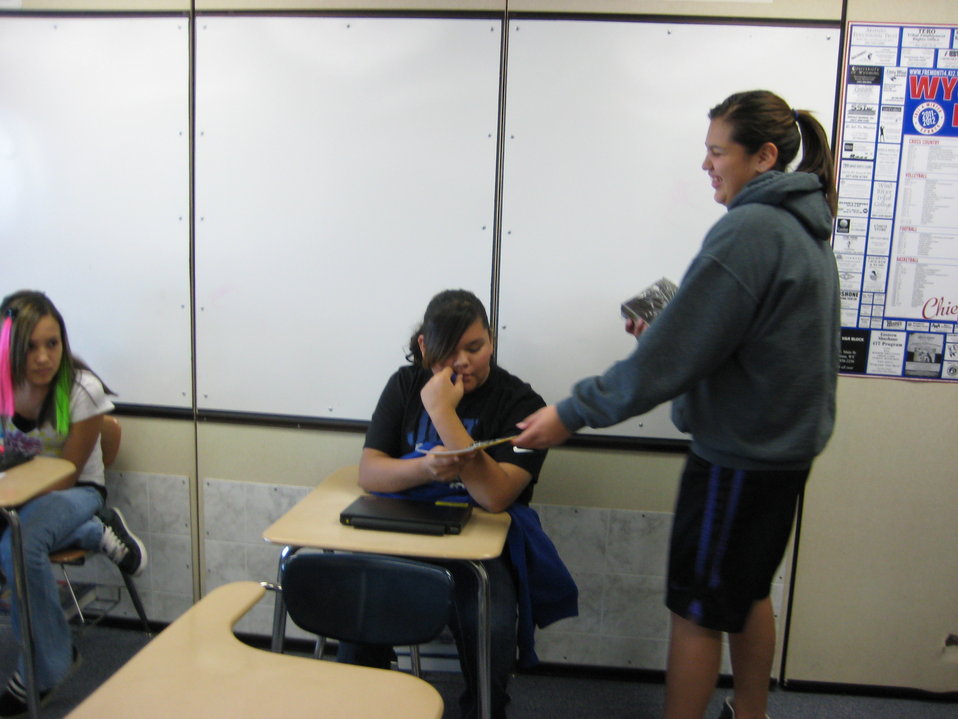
Wyoming Indian High School students read the Shatter the Myths booklet.